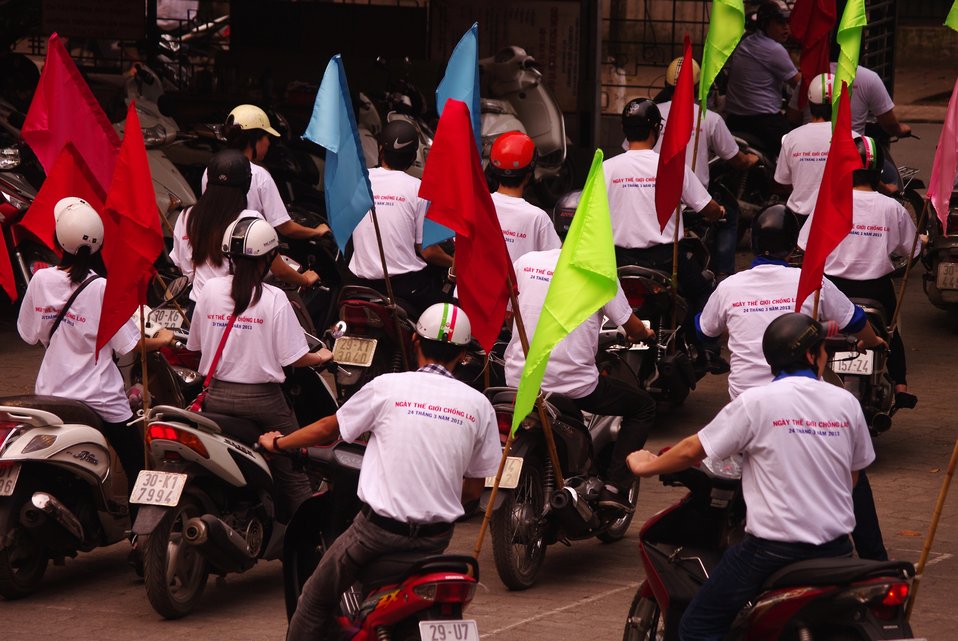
World TB Day in Hanoi: Students take to the streets with the message: Let's Stop TB in our Lifetime

March 23, 2013